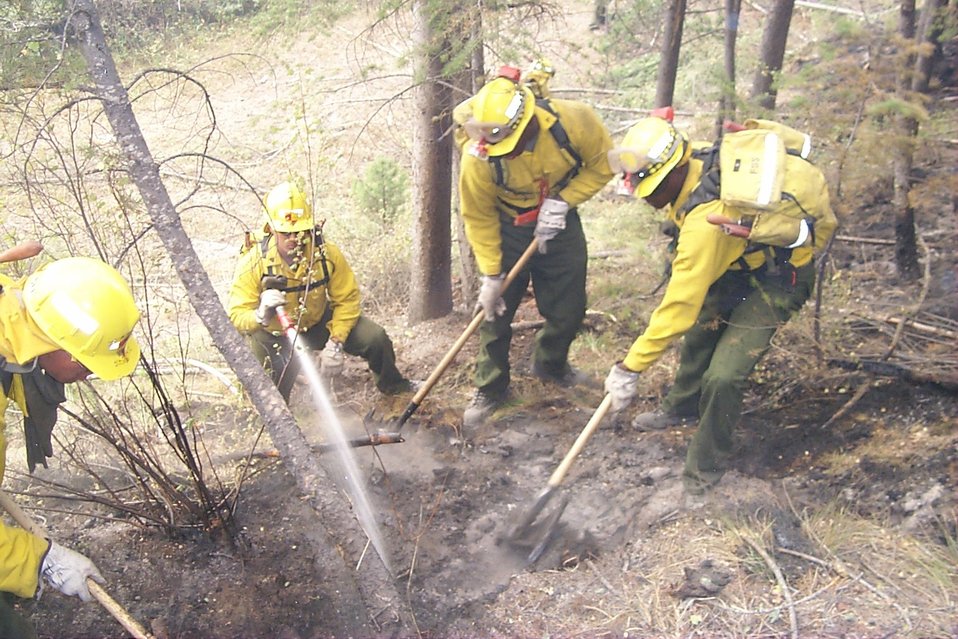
Hot spot Line crew Fire Clearwater Fire Salmon Field Office USRD Upper Snake River District